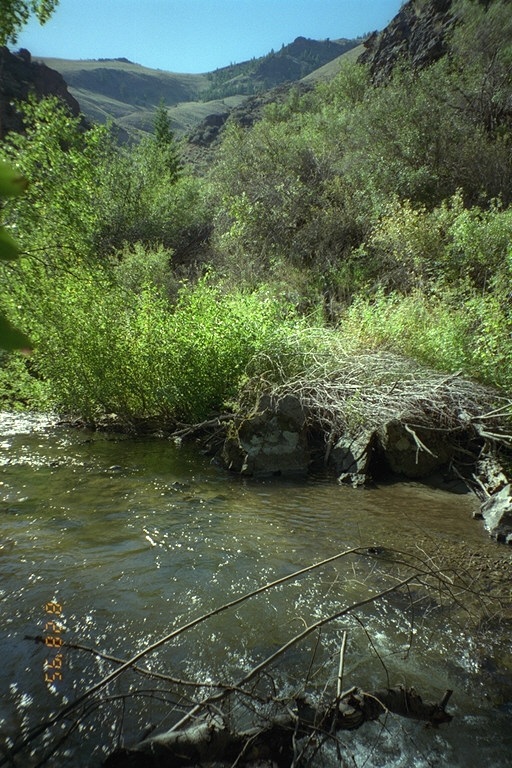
Riparian area Public Lands Salmon Field Office UCSC Upper Columbia Salmon Clearwater District